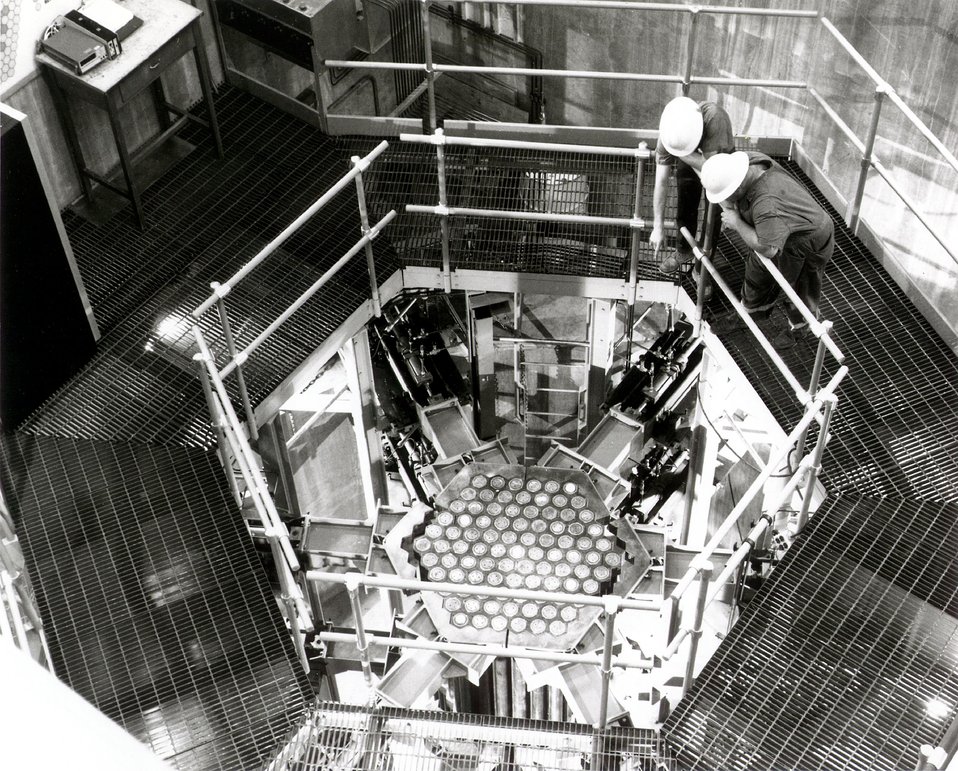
The Fast Flux Test Facility (FFTF), now under construction, will be the key project for most of the technical work presently planned in the liquid metal fast breeder reactor (LMFBR) development program. c. 1971.